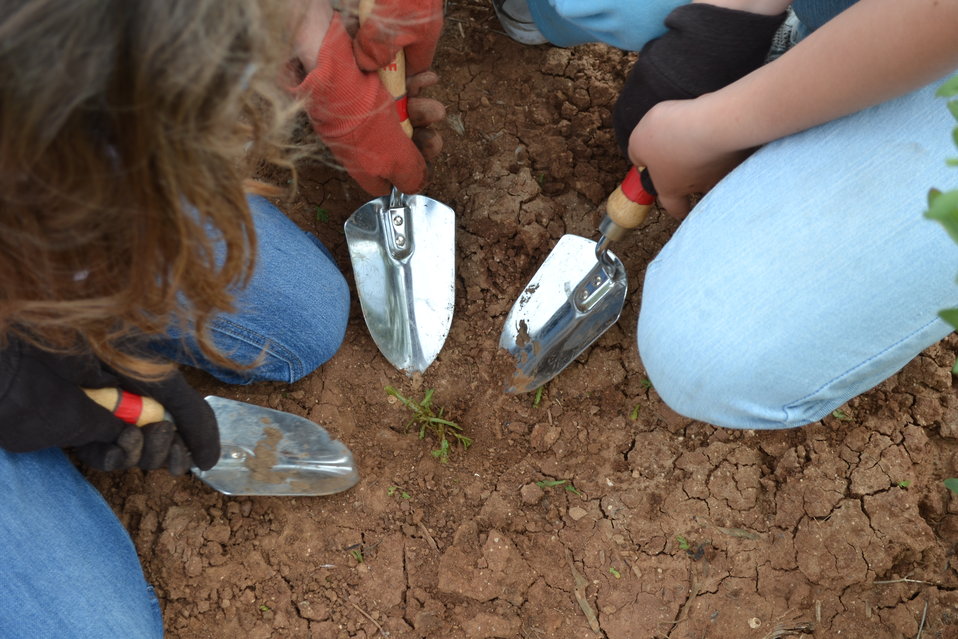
Team work!

Three girls from Imperial Beach Elementary School attack the stubborn invasive iceplant from growing on the Habitat Heroes site on San Diego Bay NWR. The Habitat Heroes site is an environmental education outdoor classroom in the South Bay where students learn about native wildlife and participate in planting/weeding of the site